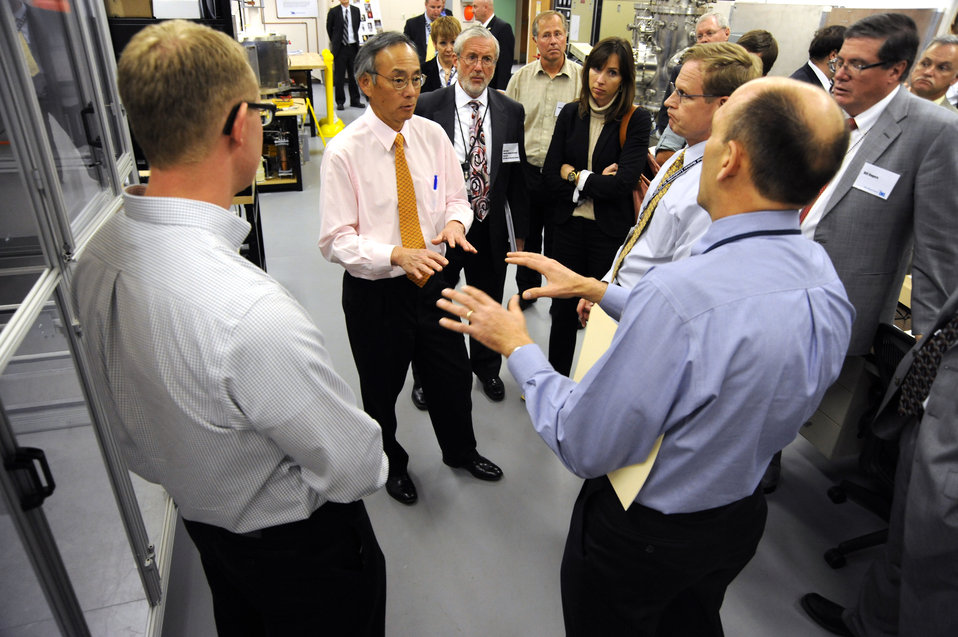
Energy Secretary Steven Chu (center) asks Richard Boardman (right foreground) questions regarding Idaho National Laboratory's Hybrid Energy Systems Test Bed.